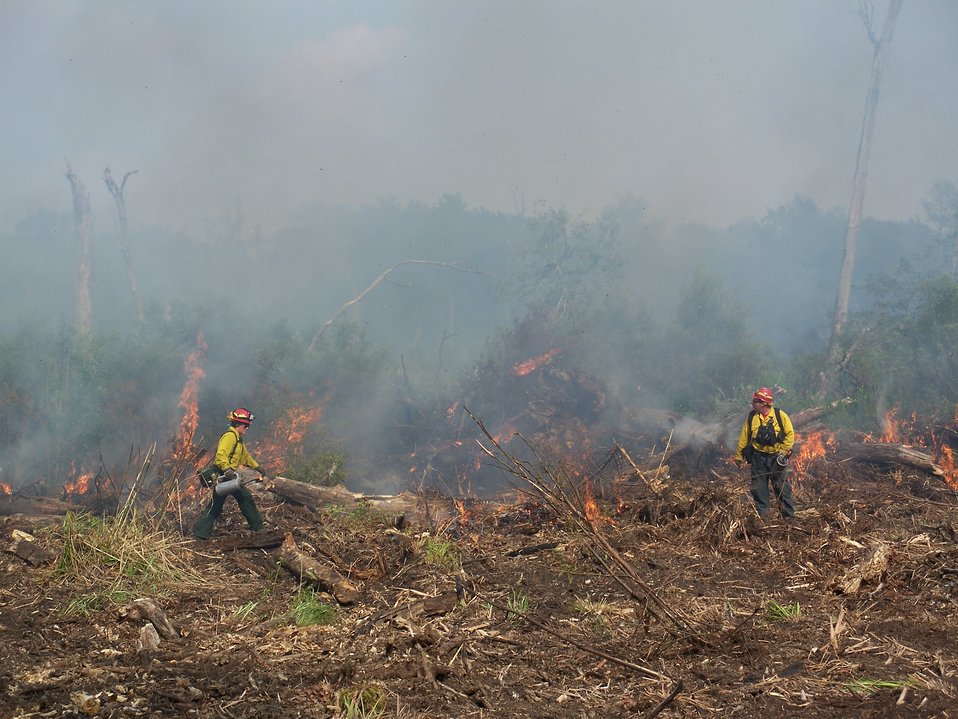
Firing in the swamp

Suffolk, VA, August 2011: Kiera Westfall (left) of Americorps NCCC Phoenix 3 Team works with Brett Gore of Wallkill River National Wildlife Refuge to burn live and dead plant material along West Ditch Road at the Lateral West Fire on Great Dismal Swamp National Wildlife Refuge. Firefighters do these burnouts to reduce the amount of flammable material between the main fire and fire containment lines and increase the chance that fire will stay within containment lines.